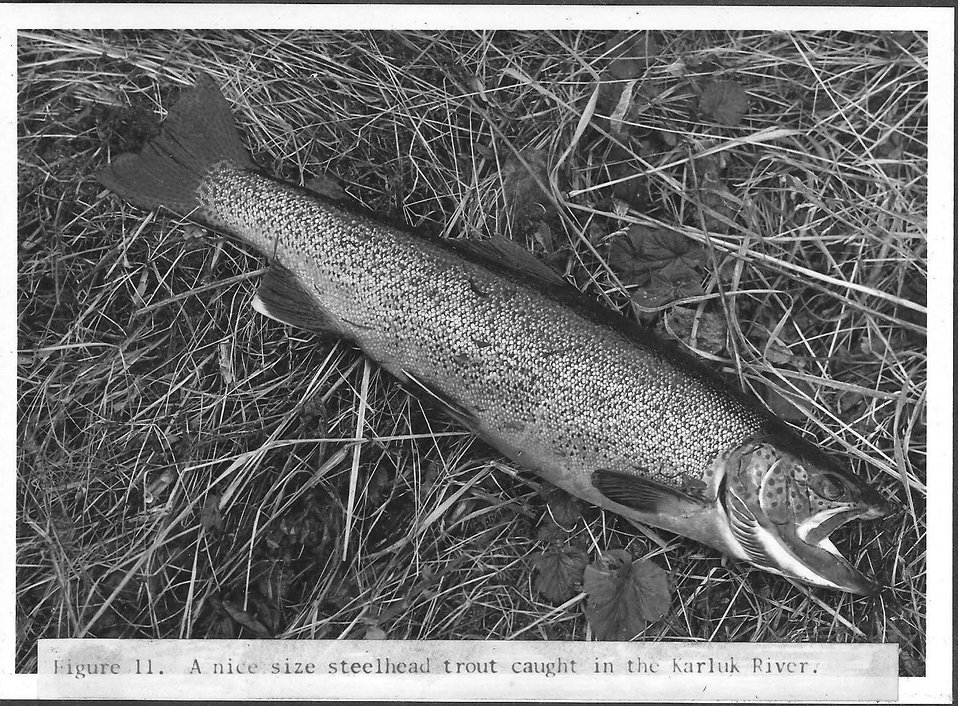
(1965) Steelhead

Credit: USFWS

Source and Contact: Kodiak National Wildlife Refuge